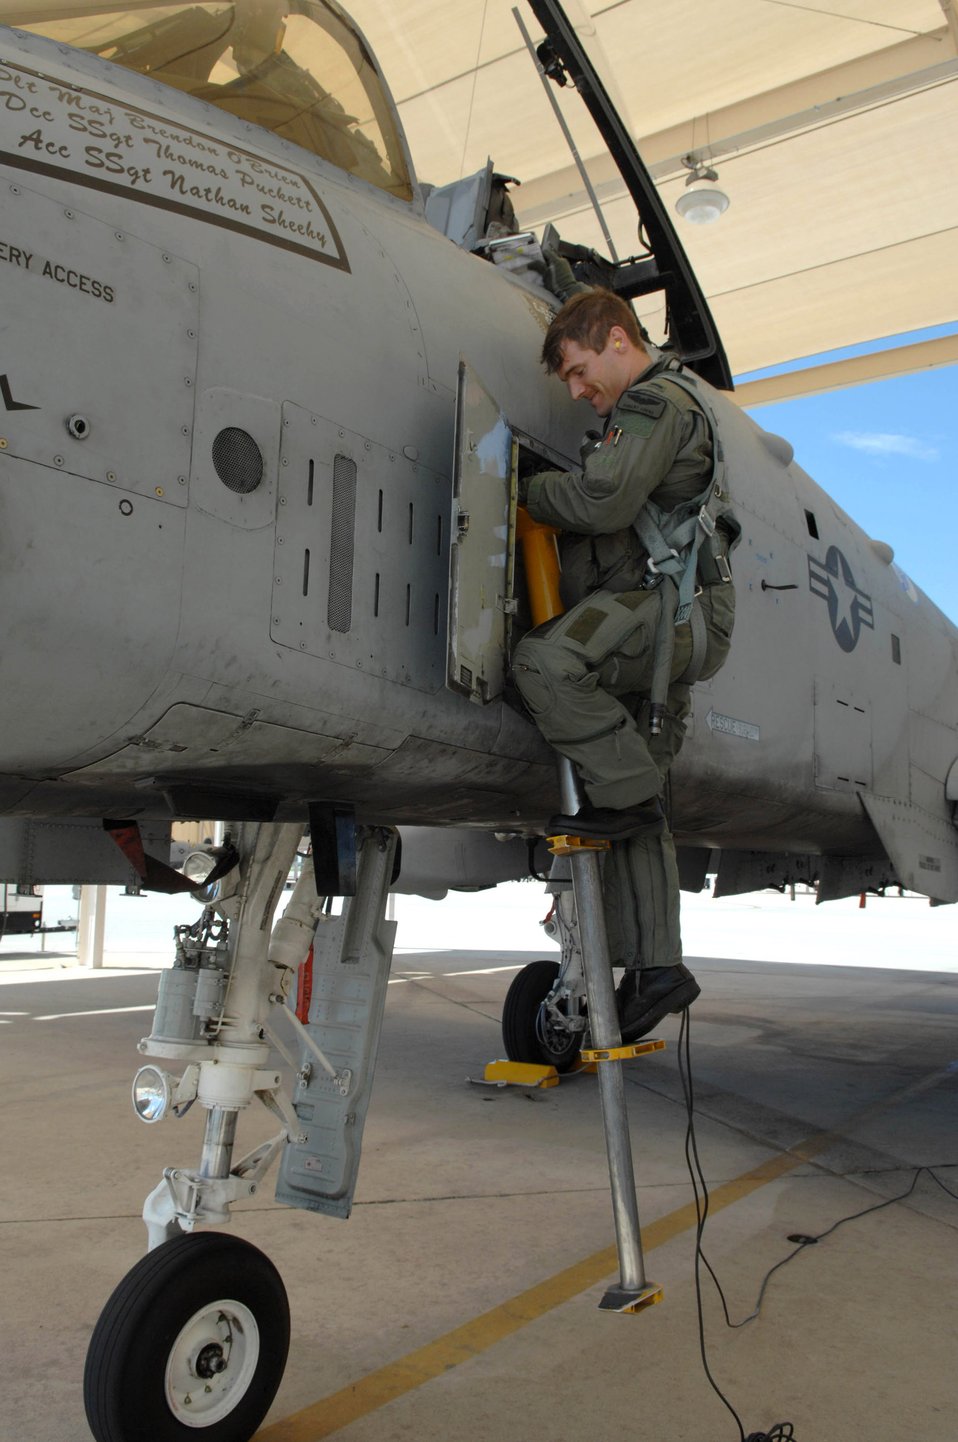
First class qualification

Second Lieutenant Robert Arena climbs out of his A-10 Thunderbolt II, after being the first pilot to land after completing the A-10C pilot initial qualification course Aug. 2 at Davis-Monthan Air Force Base, Ariz. During the seven-month-long course, the training focused on the new A-10C platform which replaced the A-10A. The pilots also learned the basics of being attack pilot wingmen, which included flying in formation to provide mutual support, communicate with radios and kill the assigned target on the first attempt. Lieutenant Arena is an A-10 pilot with the 357th Fighter Squadron.